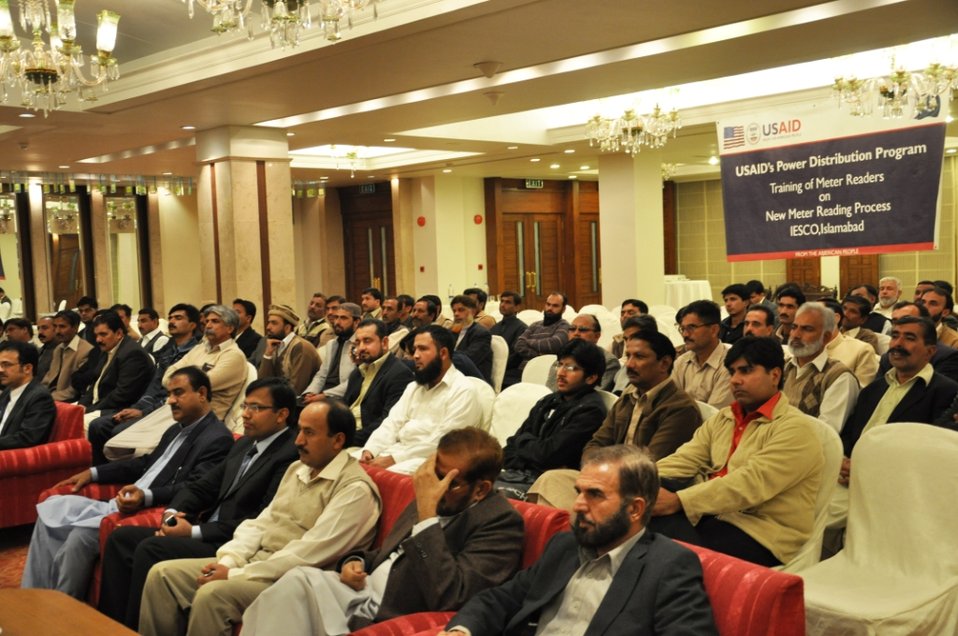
Certificate distribution ceremony of IESCO's Westridge division staff for New meter reading training

Islamabad, November 30, 2011 - USAID Power Distribution Program initiated this pilot project by providing training to 100 meter readers at Westridge and the first billing cycle that will be employing the new commercial procedures will commence in December 2011 and is expected to yield fruitful results.